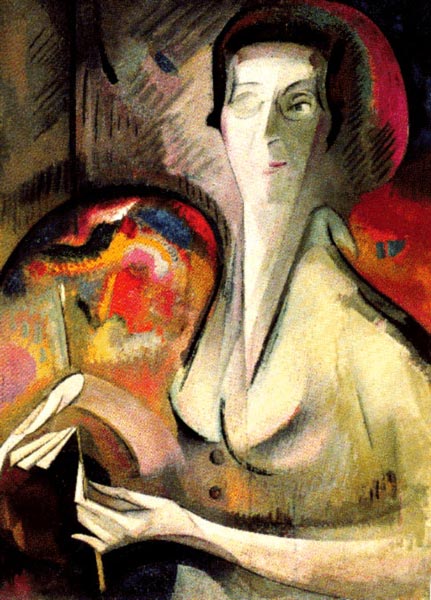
Self-Portrait (1917), Oil on canvas, 32 x 23 1/2 in. The National Museum of Women in the Arts